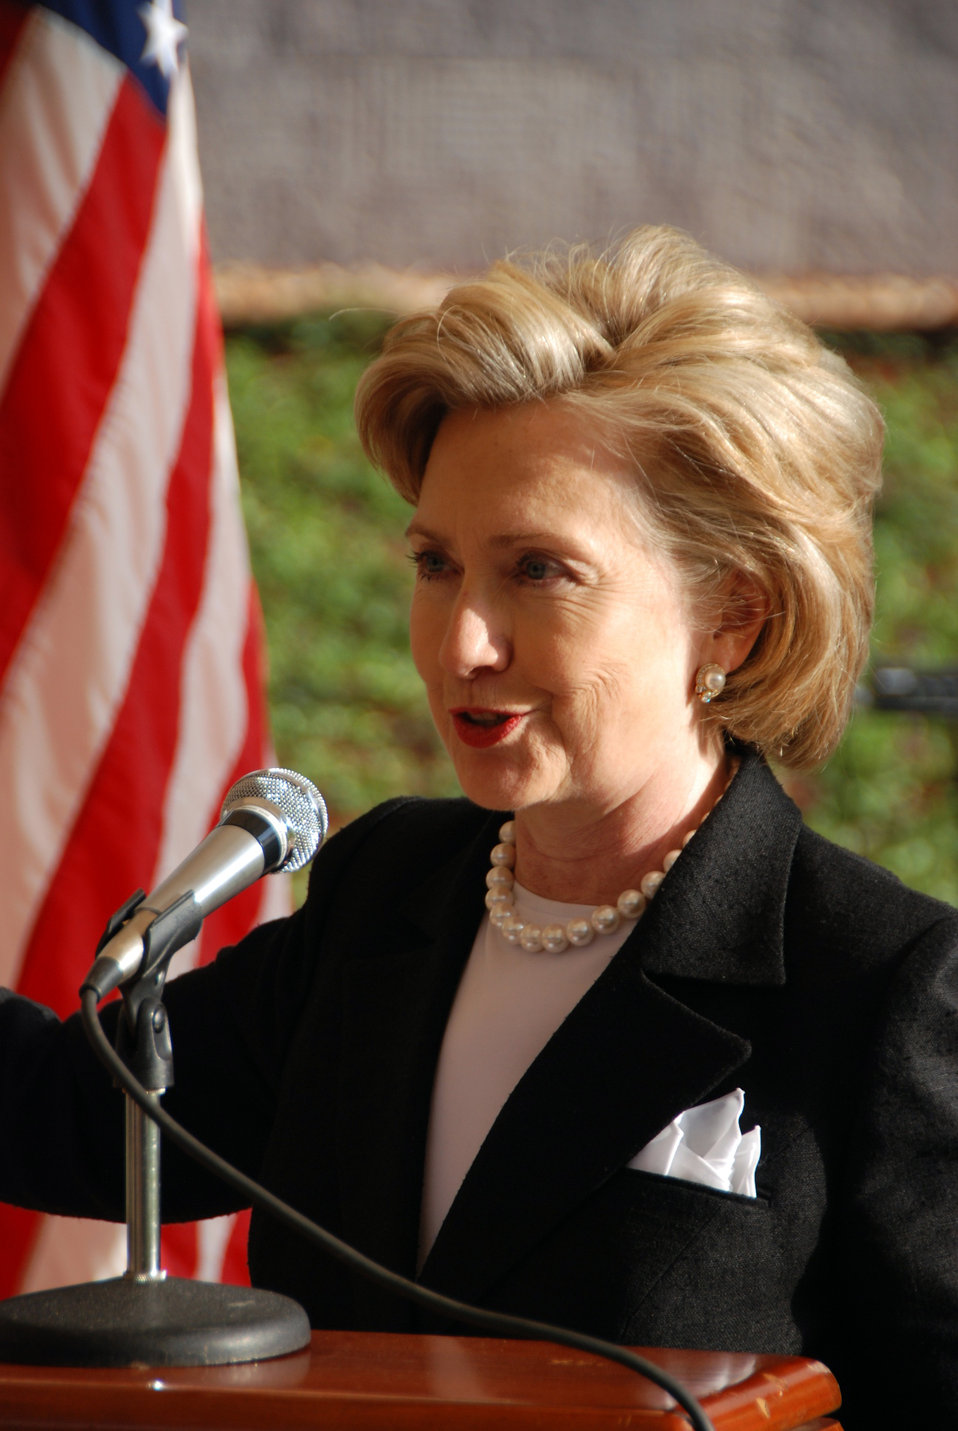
Secretary Clinton Addresses U.S. Embassy Staff in Kenya

U.S. Secretary of State Hillary Rodham Clinton addresses U.S. Embassy employees in Nairobi, Kenya August 6, 2009.